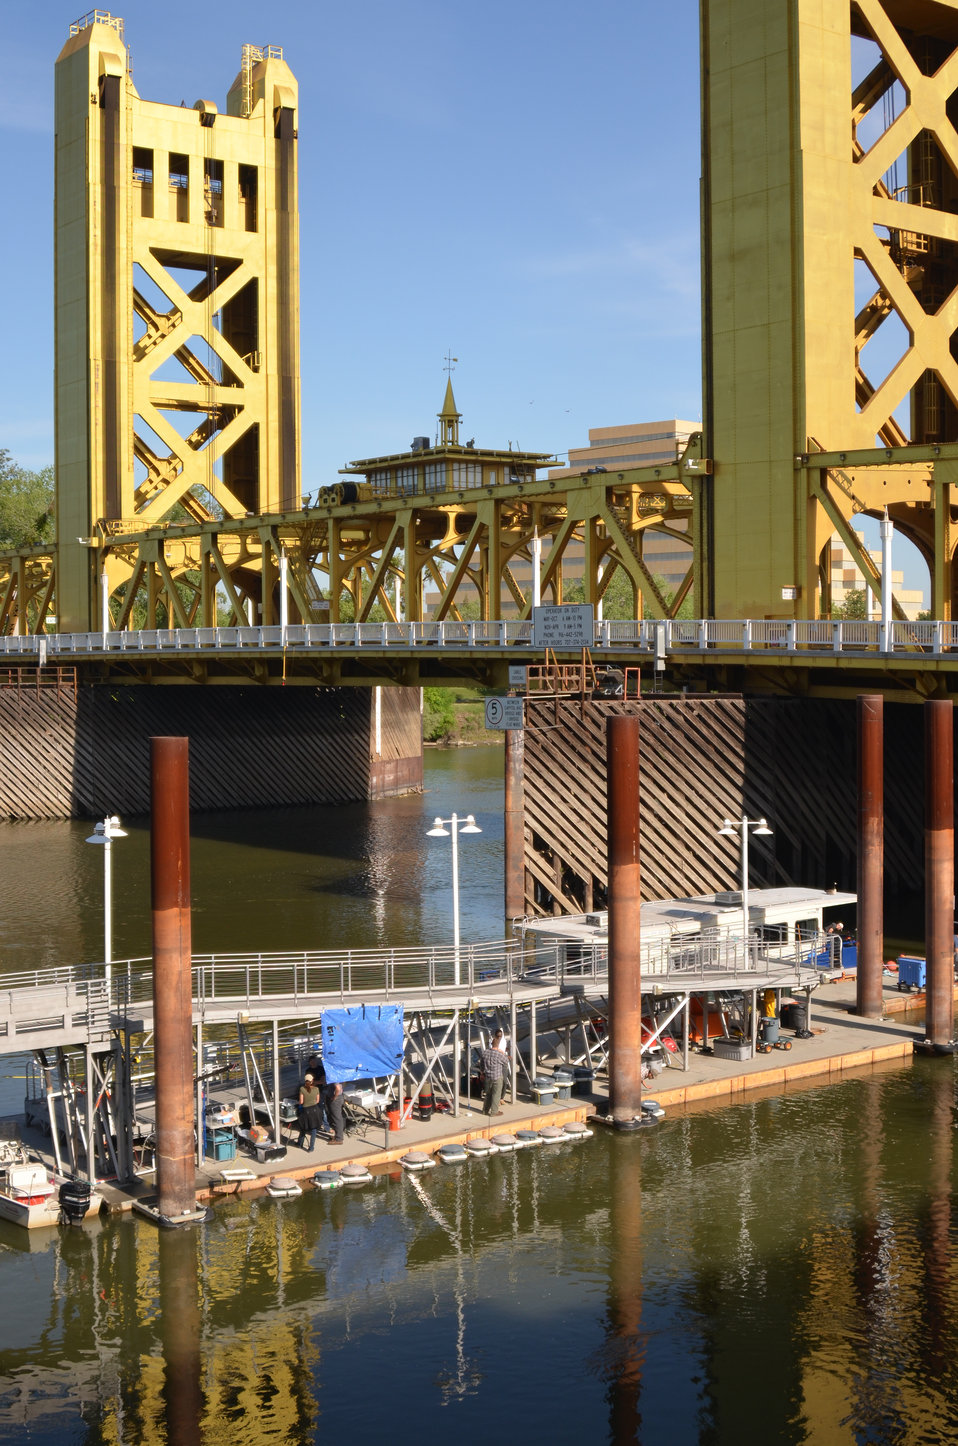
In-water fish tanks docked near Tower Bridge

Ecologists for the U.S. Army Corps of Engineers Sacramento District begin preparations to tag 42 Chinook salmon April 16, 2014, and then safely house them over night inside live-wells docked near the Tower Bridge in Sacramento, Calif. It's all part of a collaborative effort with the U.S. Geological Survey, and California’s Department of Water Resources to share fish-telemetry data from more than 5,500 tagged fish throughout the Sacramento River system. The data will help Corps researchers better evaluate habitat restoration work under the Sacramento River Bank Protection Project - a joint flood risk reduction effort between the district and the state's California Central Valley Flood Protection Board to repair river bank erosion along the Sacramento River and its tributaries.